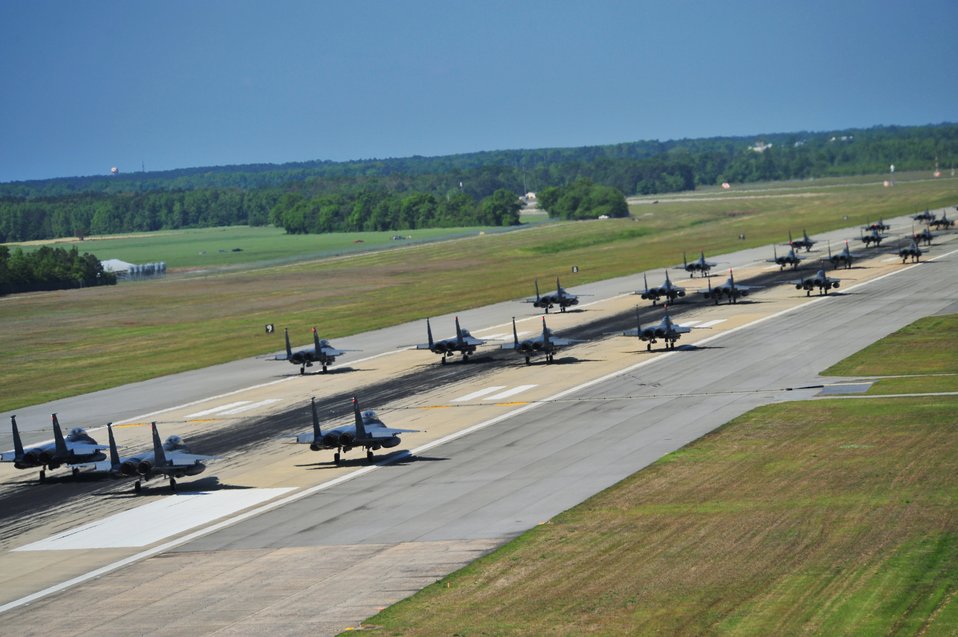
Mustang Mayhem

F-15E Strike Eagles of the 4th Fighter Wing perform an